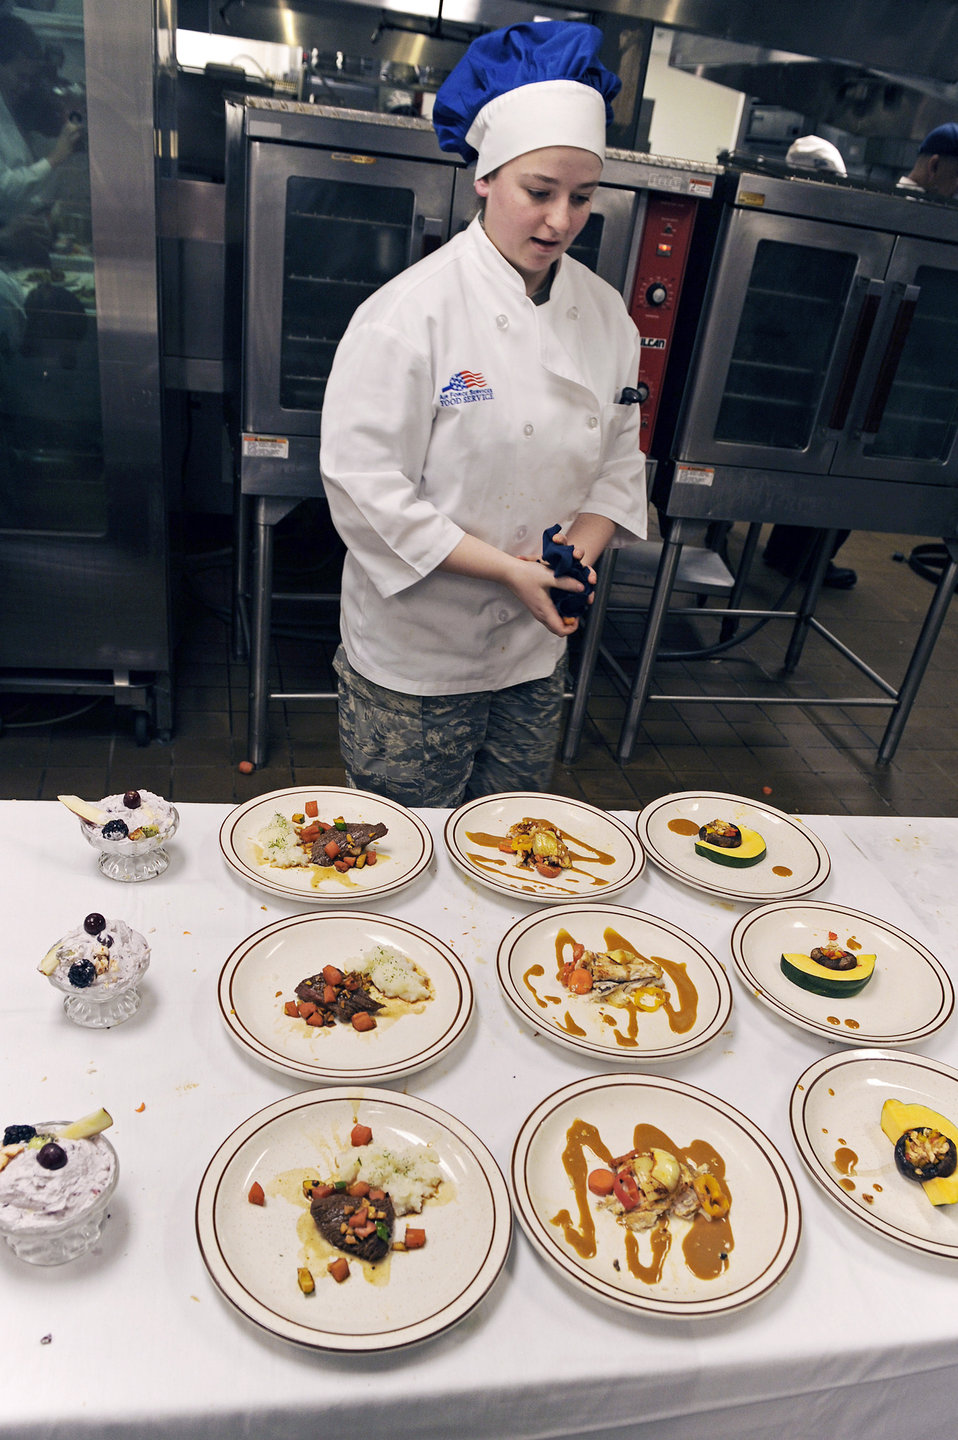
Ellsworth Airmen participate in cooking competition

Airman 1st Class Steffanie Whipple does a final inspection of the dishes she and her team created during the second annual